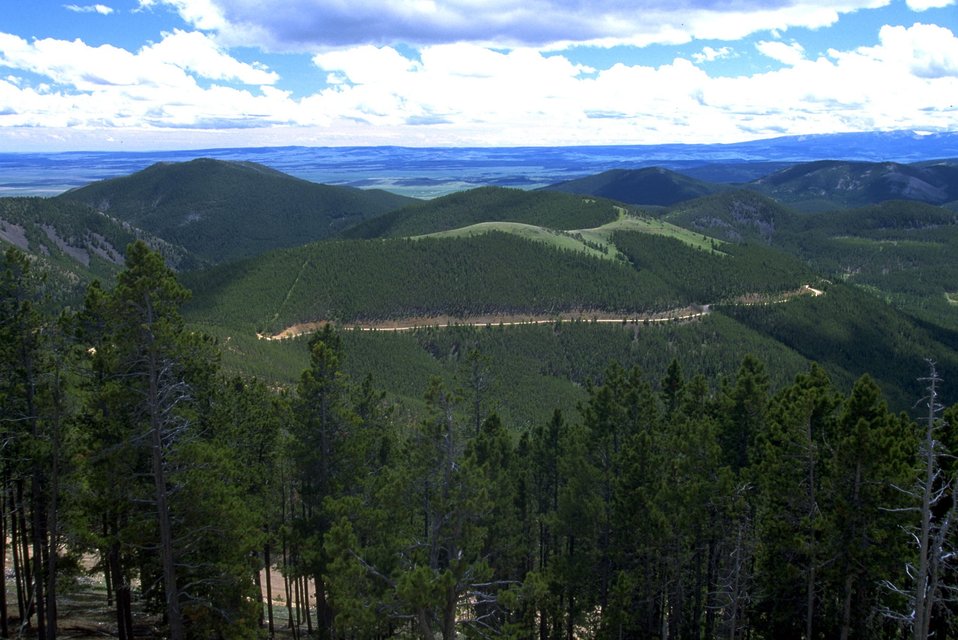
Looking down on a road in the Judith Mountains